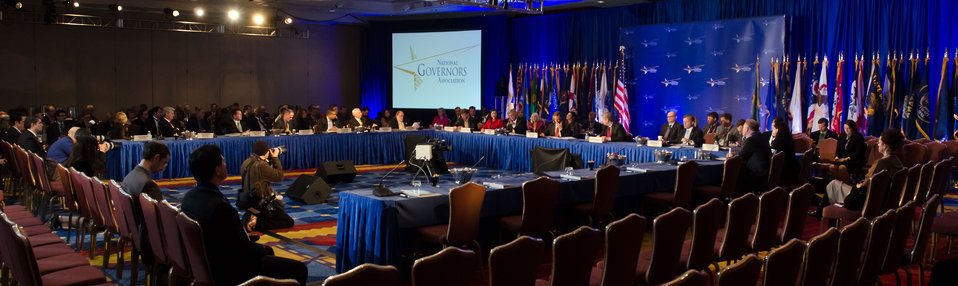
Agriculture Secretary Tom Vilsack was a guest speaker at the National Governors Association Education, Early Childhood and Workforce Committee meeting in Washington, D.C., on Sunday, February 26, 2012.